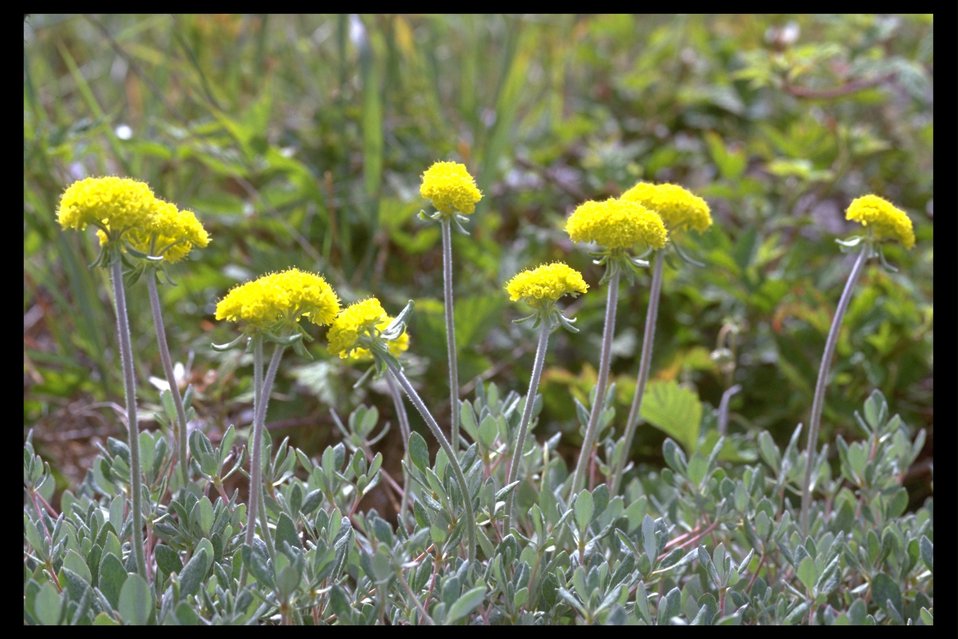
Unknown flower along Upper Trail Creek.